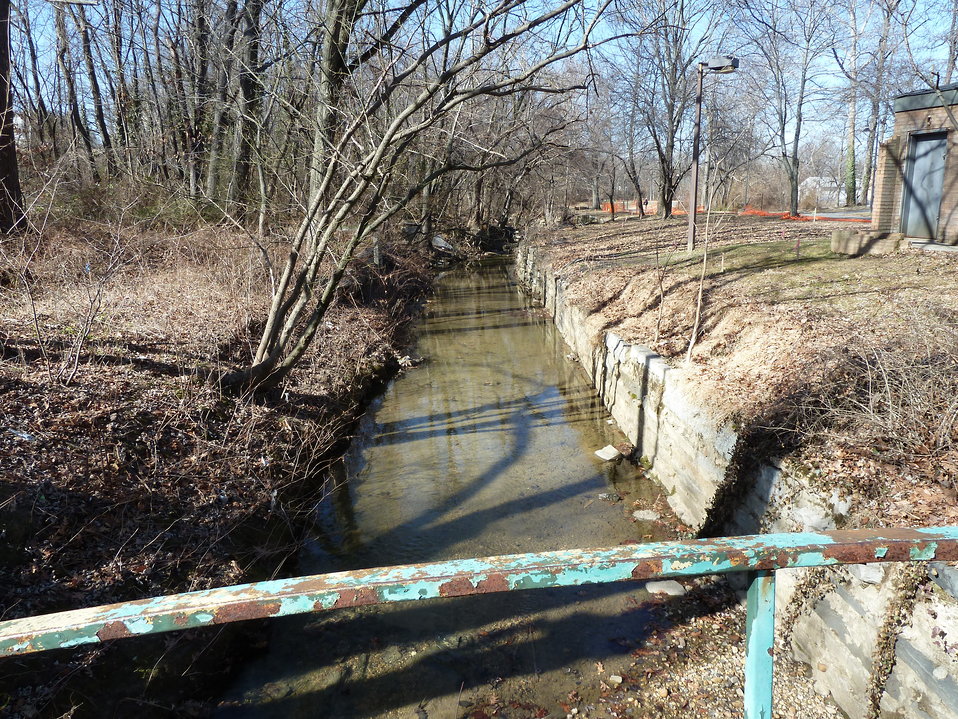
Restoring an Urban Stream (before)

Before restoration, Watts Branch in the Anacostia River watershed was little more than a concrete ditch.